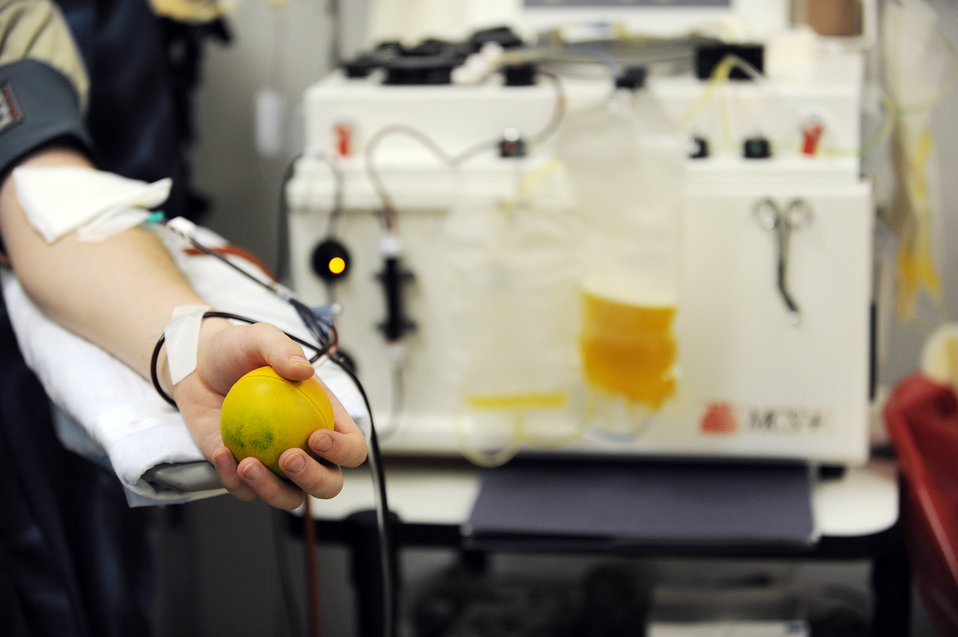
Blood donors are vital

Staff Sgt. Ryan Eanes, a surveillance technician with the 727th Expeditionary Air Control Squadron at Joint Base Balad, Iraq, squeezes a stress ball during a platelet donation March 4, 2010. Sergeant Eanes has made nine donations during his deployment. The procedure takes approximately one and a half to two hours. Sergeant Eanes is deployed from Hill Air Force Base, Utah, and is a native of Denver, Colo.